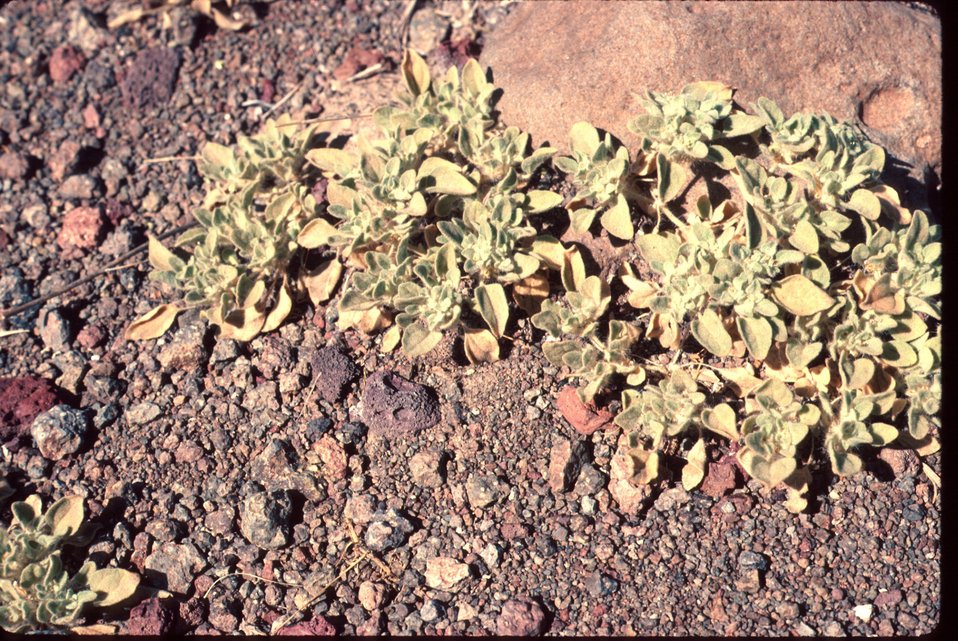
Eremocarpus Dove weed Wildflower